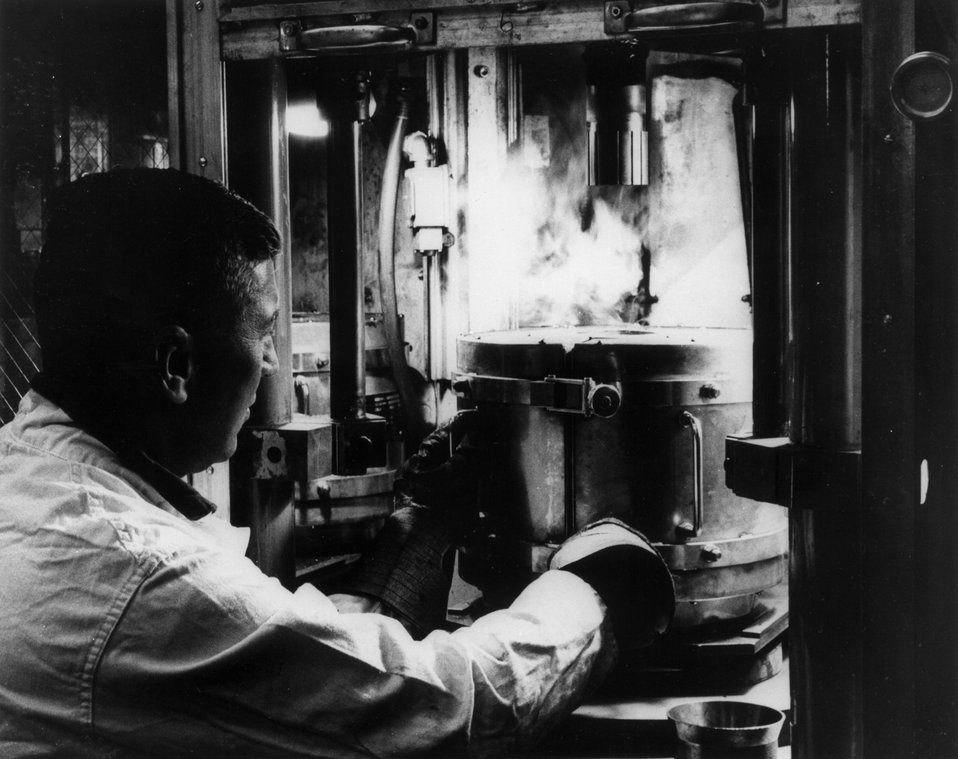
Nuclear fuel compacts of uranium and thorium dicarbide are fabricated at General Atomic Division of General Dynamics in San Diego, California, for use in high temperature, gas-cooled atomic power reactor system. c. 1963